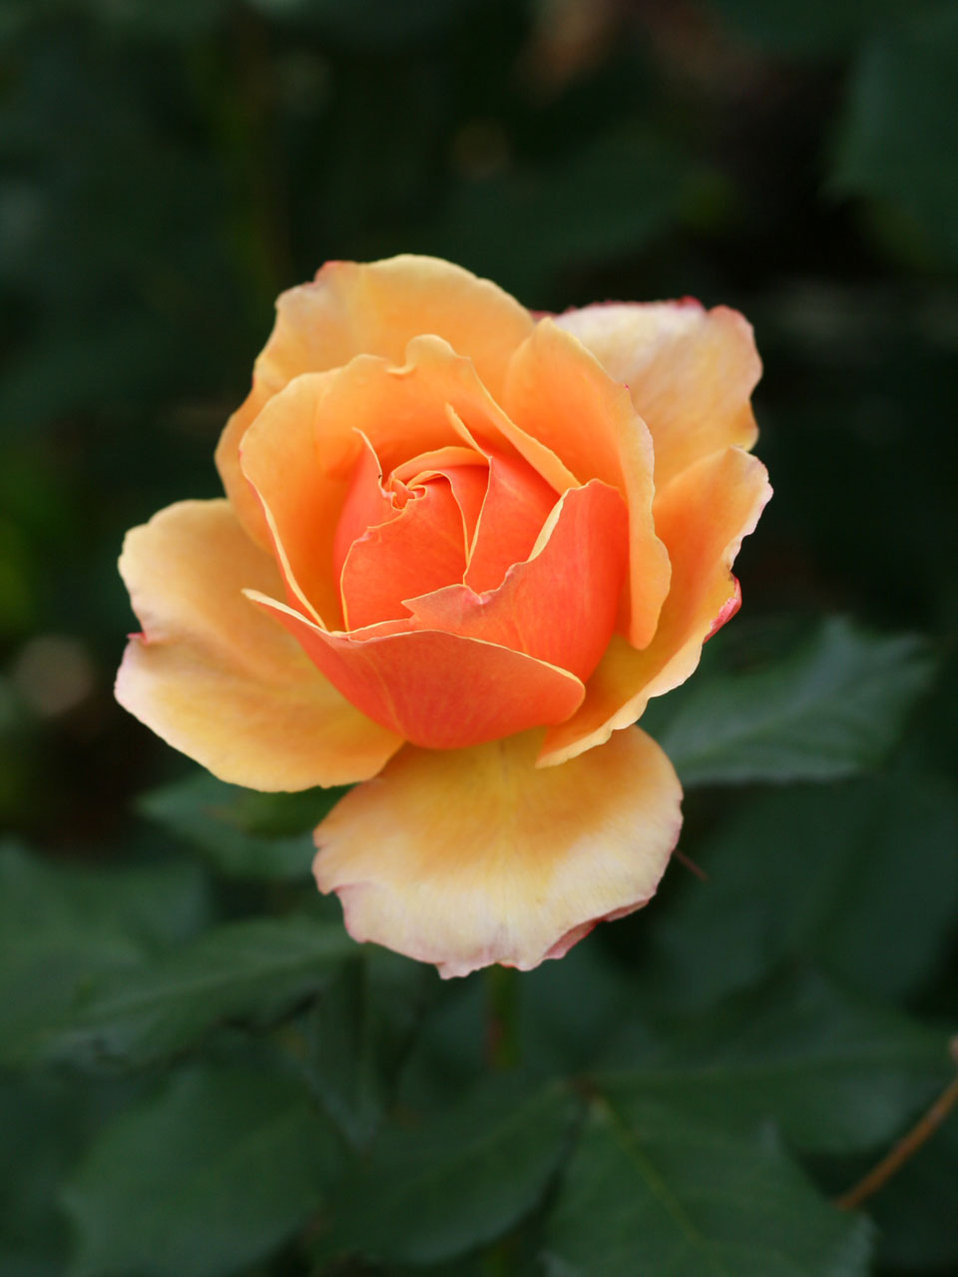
Creamsicle rose

Creamy orange rose shot in a wonderful garden in pinole, ca..